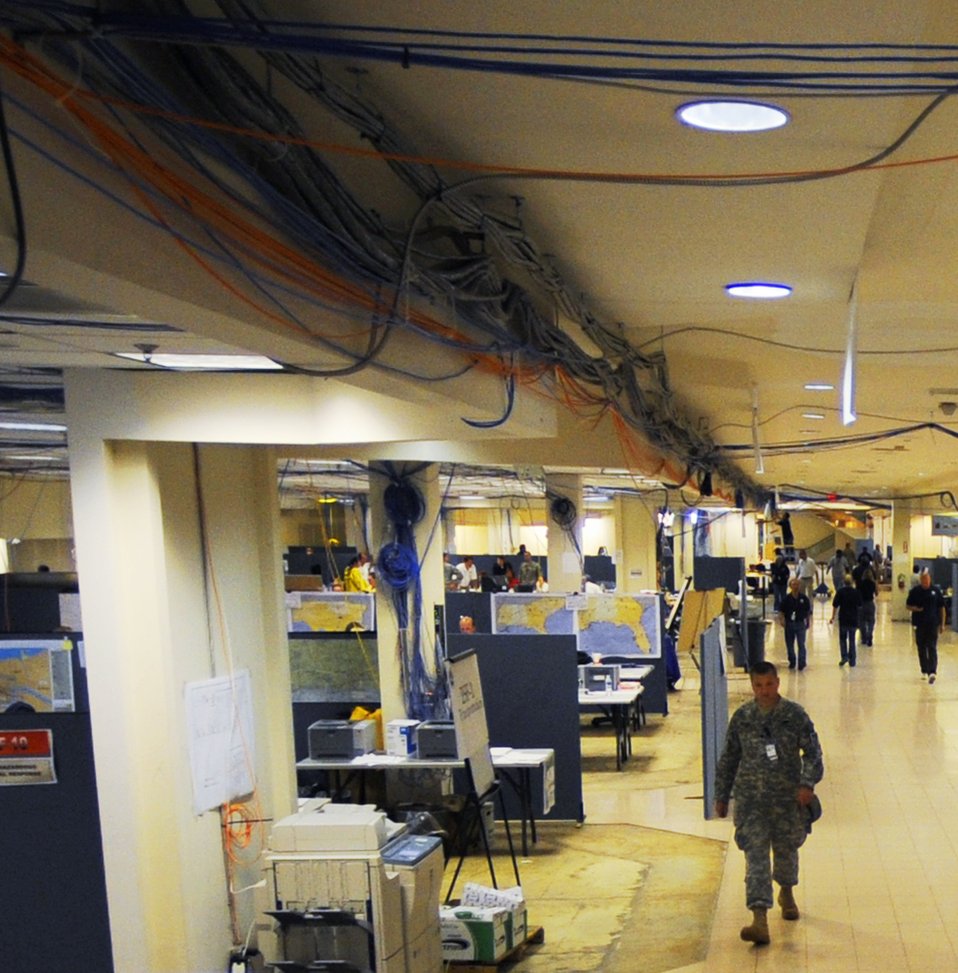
Guard vital to hurricane relief efforts

Officials with the Federal Emergency Management Agency and the Department of Defense work with representatives of attached emergency agencies Sept. 1 at the Hurricane Gustav Joint Field Office in Baton Rouge, La., to conduct evacuation and relief operations.